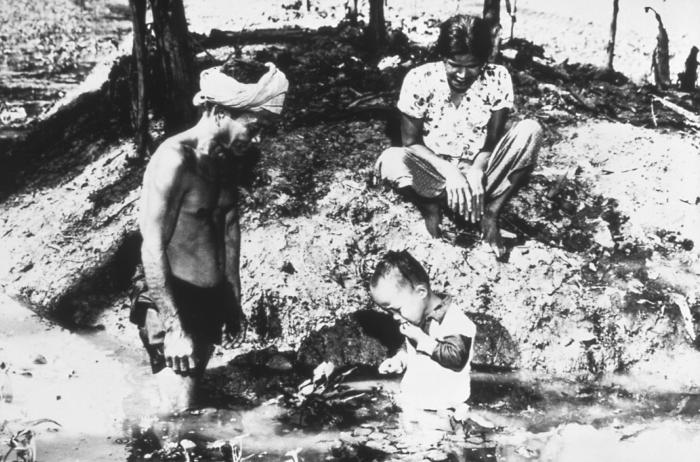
This child in Central Thailand is standing in water while eating water caltrops.